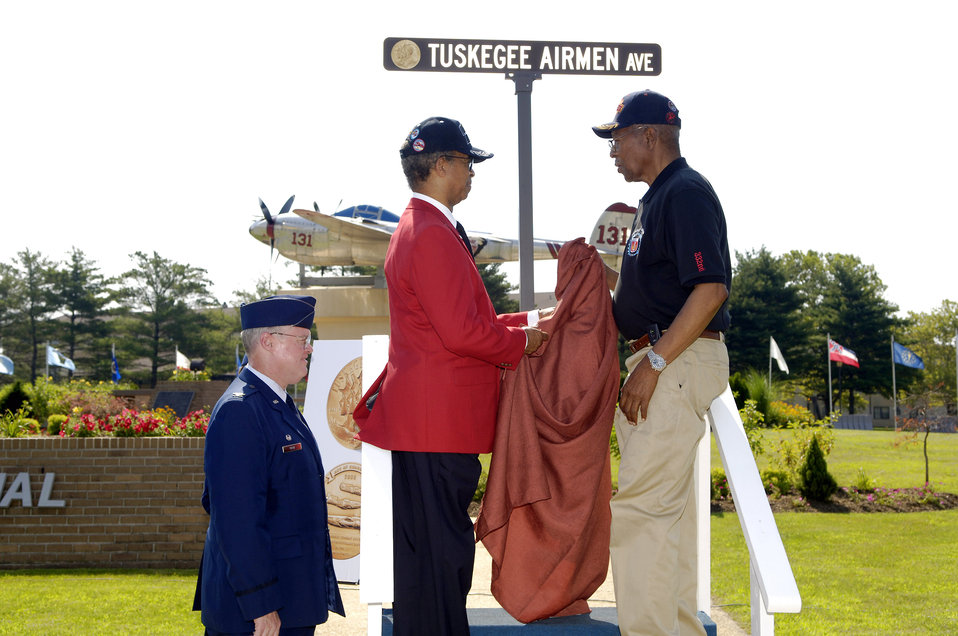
McGuire honors Tuskegee Airmen

Retired Lt. Gen. Russell Davis (left), national president of Tuskegee Airmen, Incorporated, and retired Master Sgt. Shade Lee, a documented original Tuskegee Airman, unveil a new street sign featuring an image of the Congressional Gold Medal at the rededication of Tuskegee Avenue July 17 at McGuire Air Force Base, N.J. The ceremony, which was part of the 37th Tuskegee Airmen National Convention ending July 20 in Philadelphia, was held in honor of the Tuskegee Airmen's significant accomplishments, which include the Congressional Gold Medal awarded in March 2007.